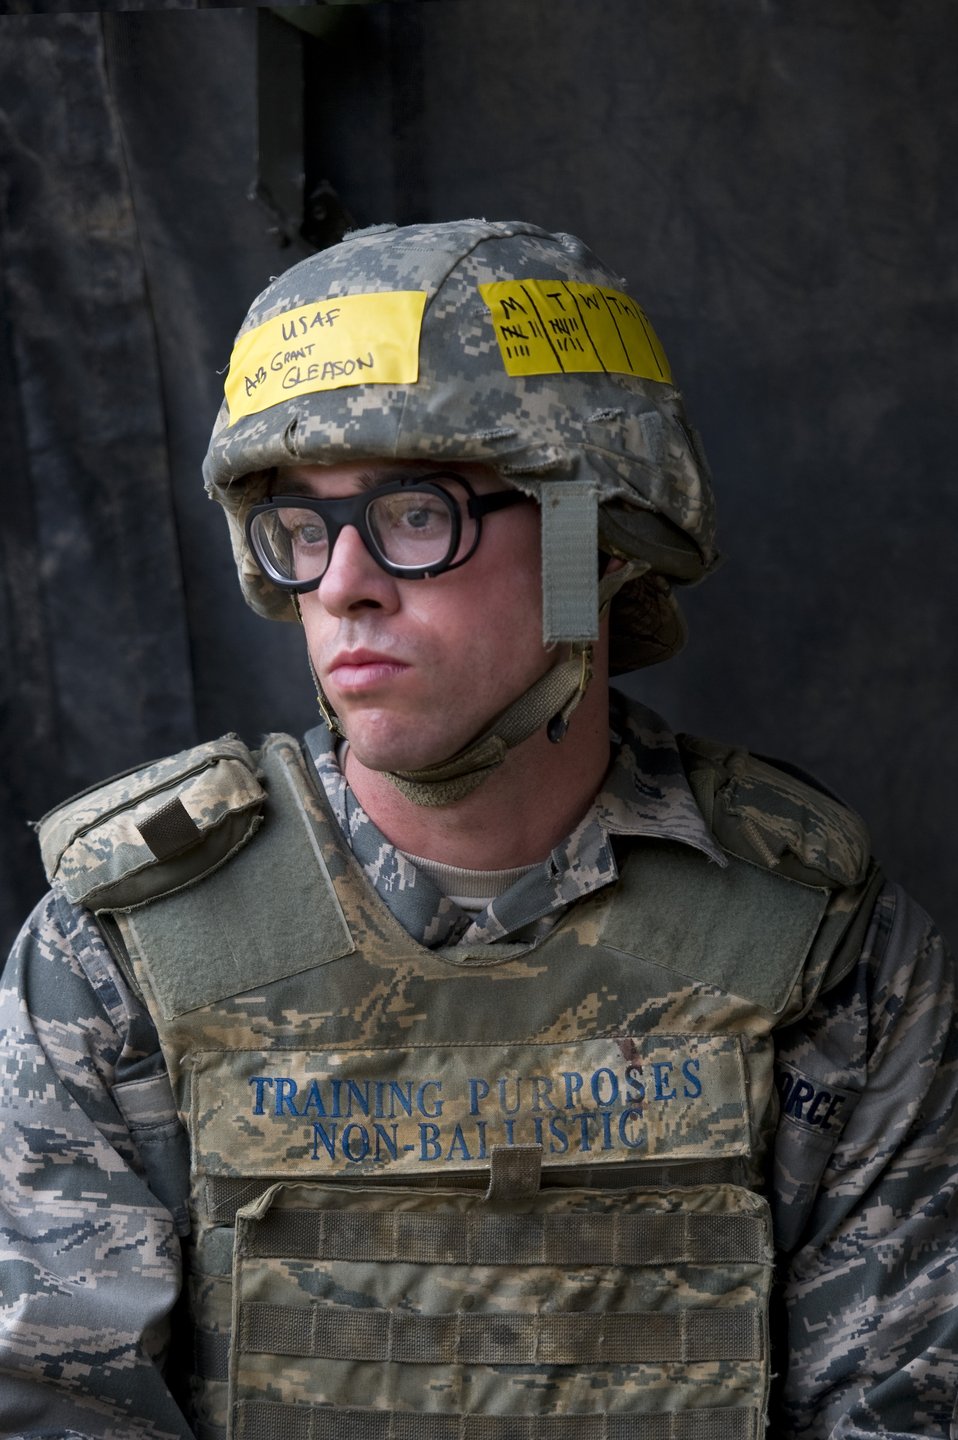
BEAST

Basic trainees go through their sixth week of Air Force basic military training at the Basic Expeditionary Airman Skills Training on May 25, 2011, at Lackland Air Force Base, Texas.